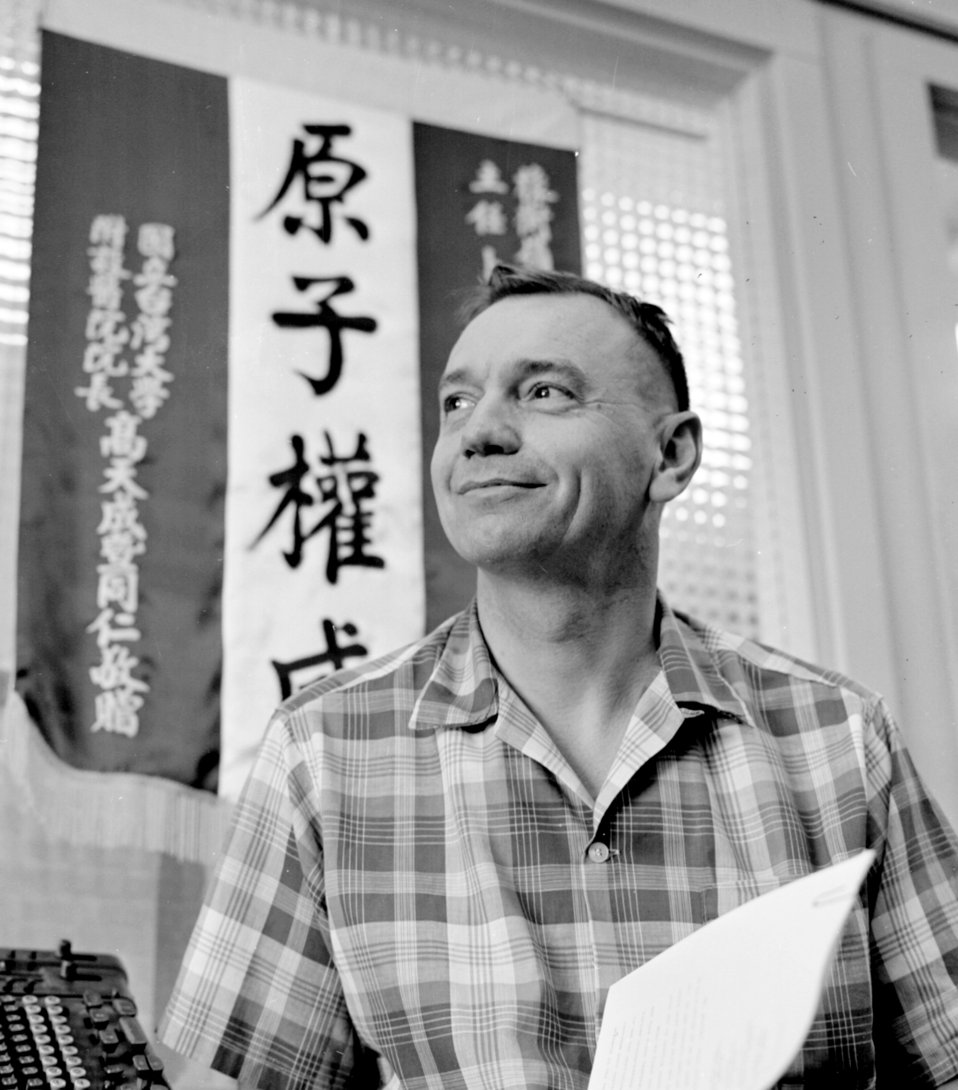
Dr. Marshall Brucer Oak Ridge

57-1119 DOE photo by Ed Westcott Marshall Brucer, first chairman of the Oak Ridge Institute for Nuclear Studies (ORINS) Medical Division 8/2/57 Oak Ridge Tennessee